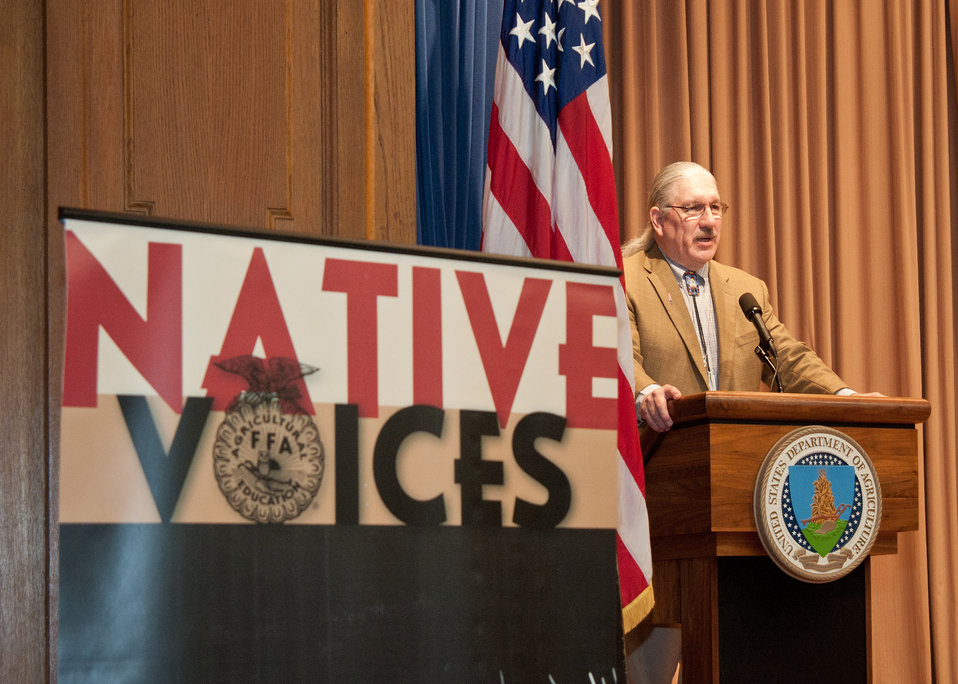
Arthur “Butch” Blazer, Deputy Under Secretary, Natural Resources and Environment offered his experience’s and opportunities as the keynote speaker at the United States Department of Agriculture, Native American Indian Heritage Month celebration in Washington, DC, on Wednesday, November 16, 2011, The theme of this year’s event is, “Native Youth: Cultivating the Future.”